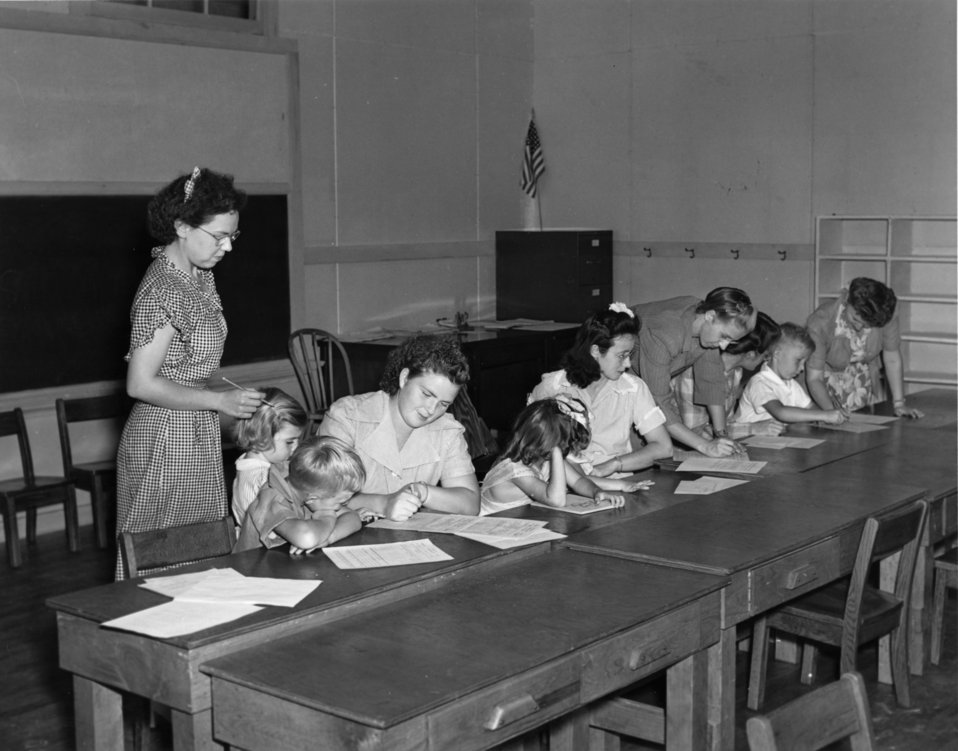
Early settlers at Oak Ridge